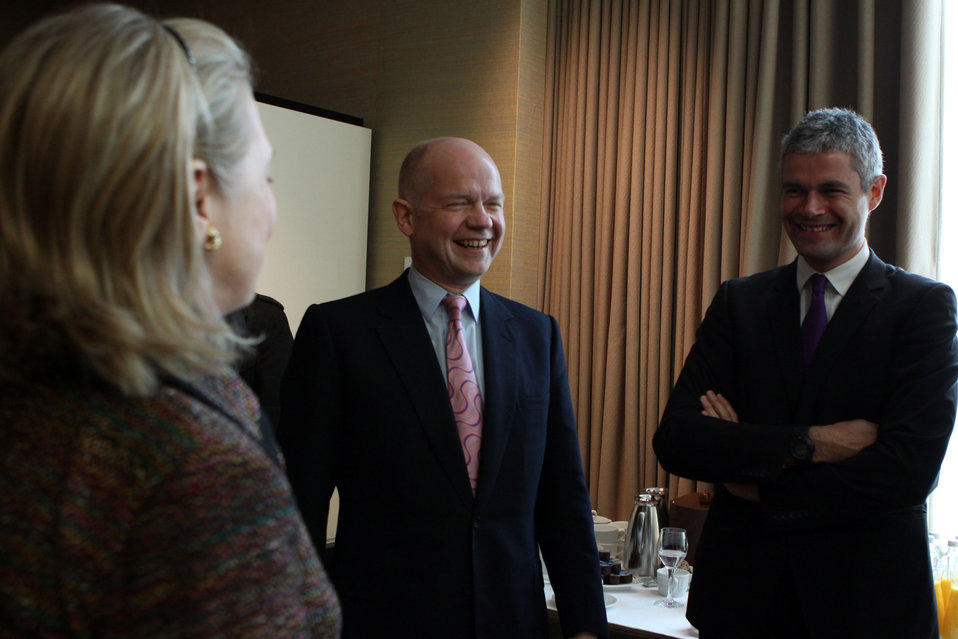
Secretary Clinton Speaks With British Foreign Minister Hague and French European Affairs Minister Vauquier

U.S. Secretary of State Hillary Rodham Clinton speaks with British Foreign Secretary William Hague, center, and French European Affairs Minister Laurent Vauquier, right, at a meeting of the Quint Foreign Ministers at the Hotel Intercontinental in Geneva, Switzerland, on February 28, 2011.